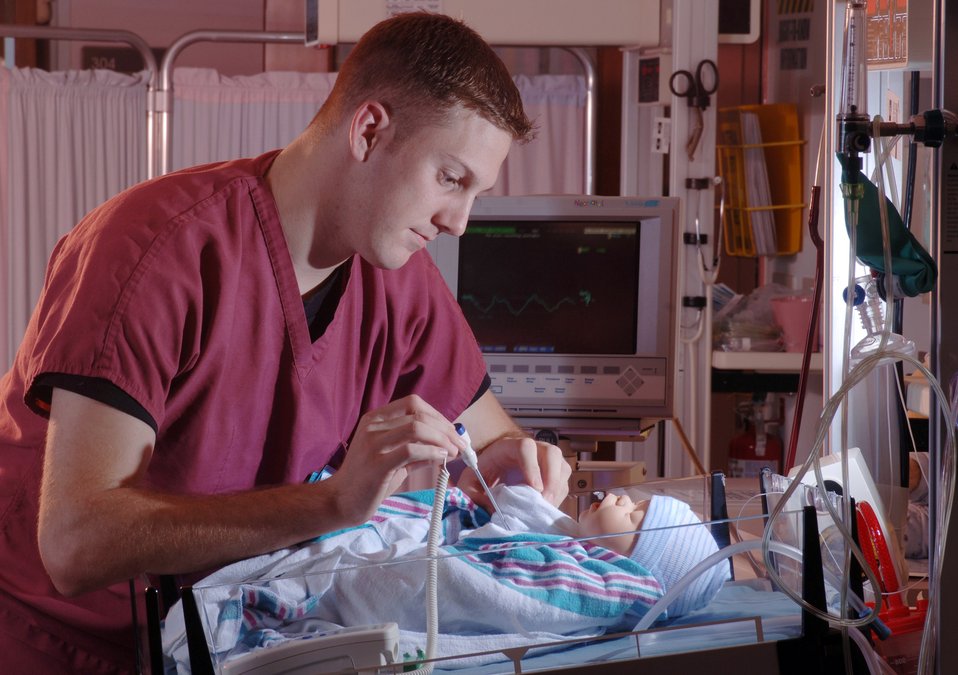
Practicing a little TLC

YOKOTA AIR BASE, Japan -- Airman 1st Class Doug McNett examines a